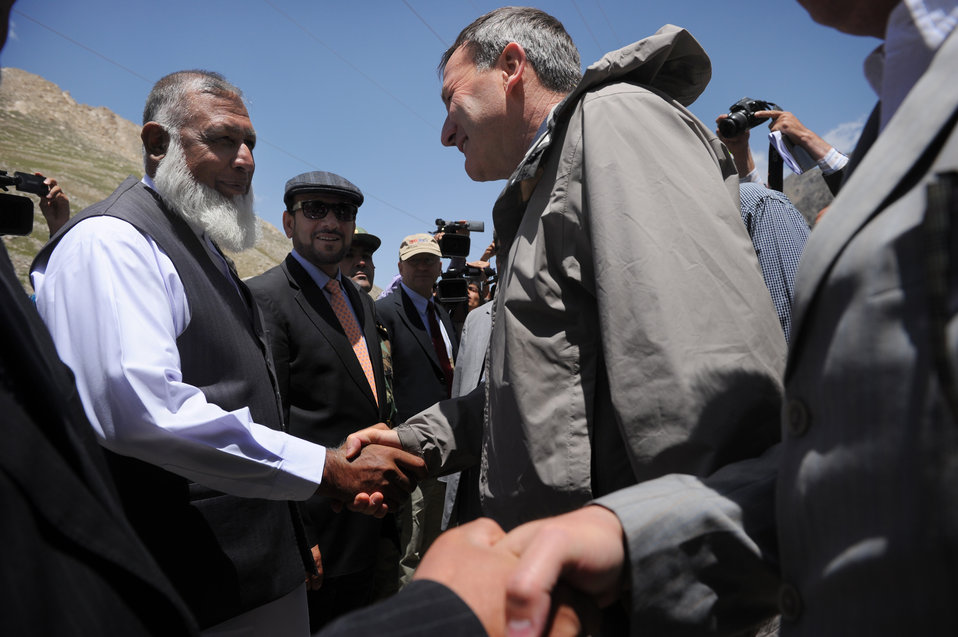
U.S. Ambassador Karl W. Eikenberry attends a ceremony to mark the beginning of renovations at the Salang Tunnel on the border of Parwan and Baghlan Provinces, Afghanistan, on Wednesday, June 15, 2011. (S.K.Vemmer/Department of State)